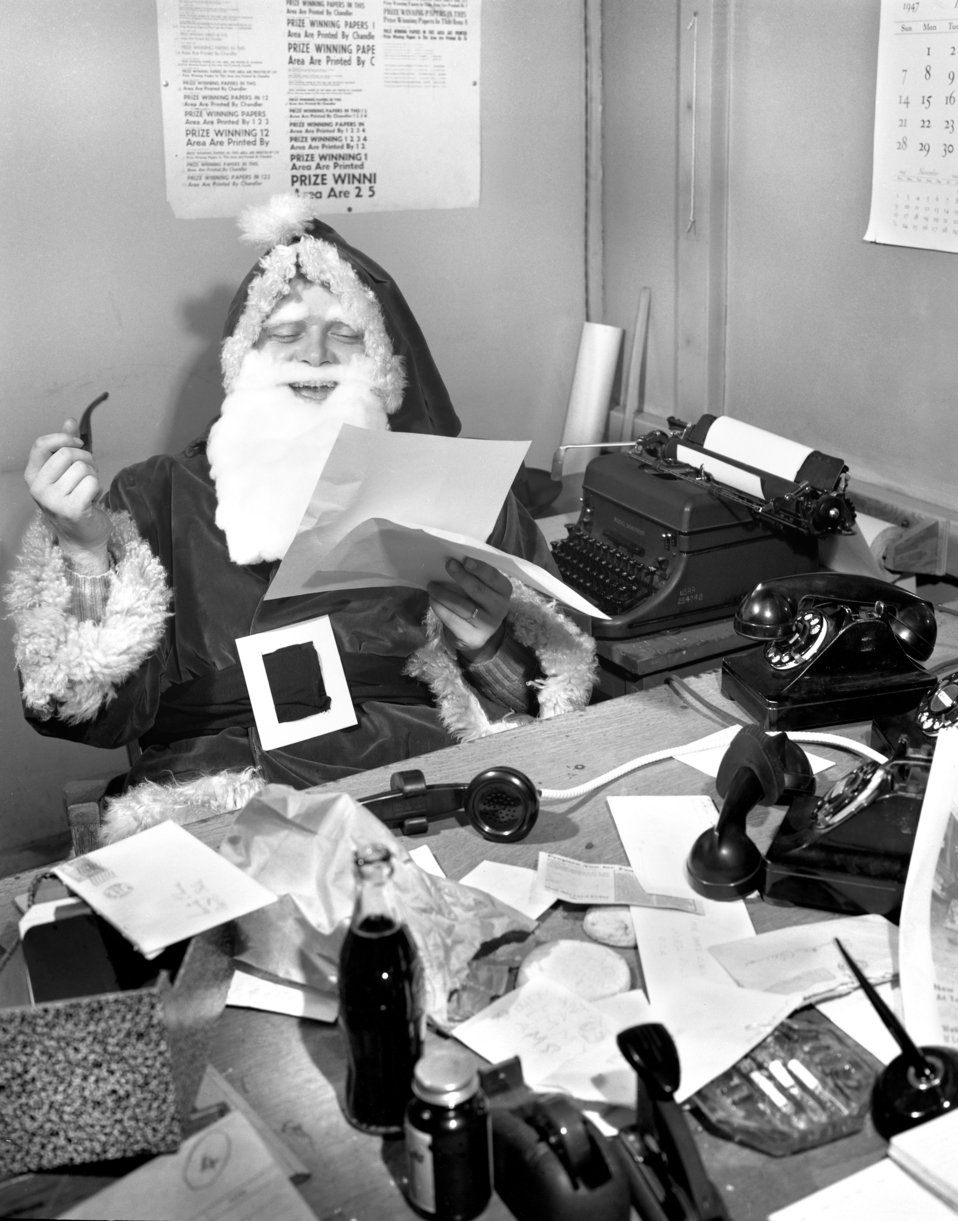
Santa Claus Oak Ridge 1947

4080a DOE photo Ed Westcott 12-11-1947 Ed Morgan as Santa Claus Oak Ridge Tennessee